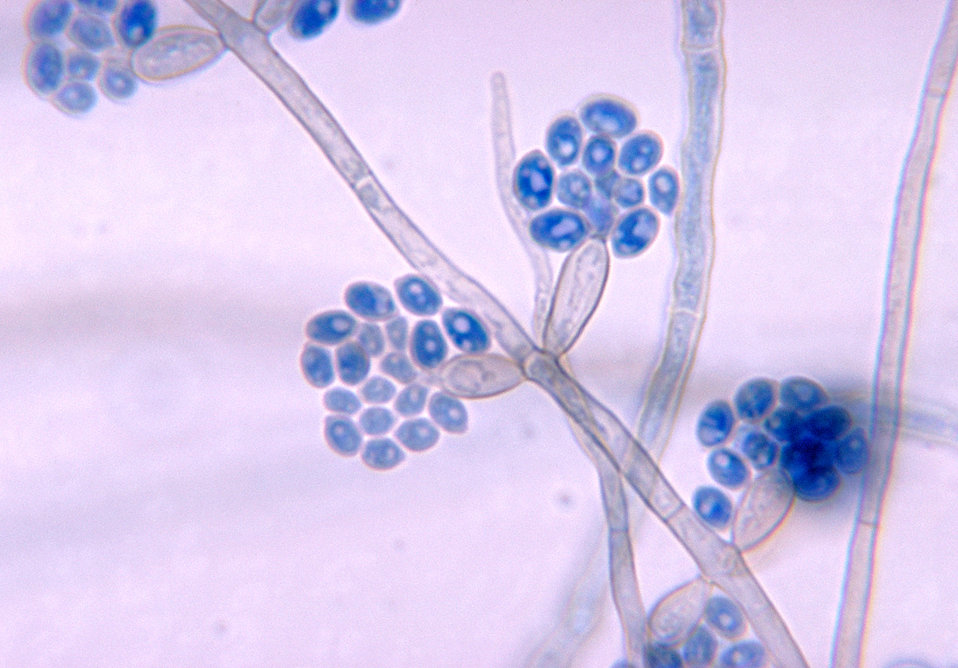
This micrograph depicts the conidia-laden conidiophores of the fungal organism Exophiala salmonis.